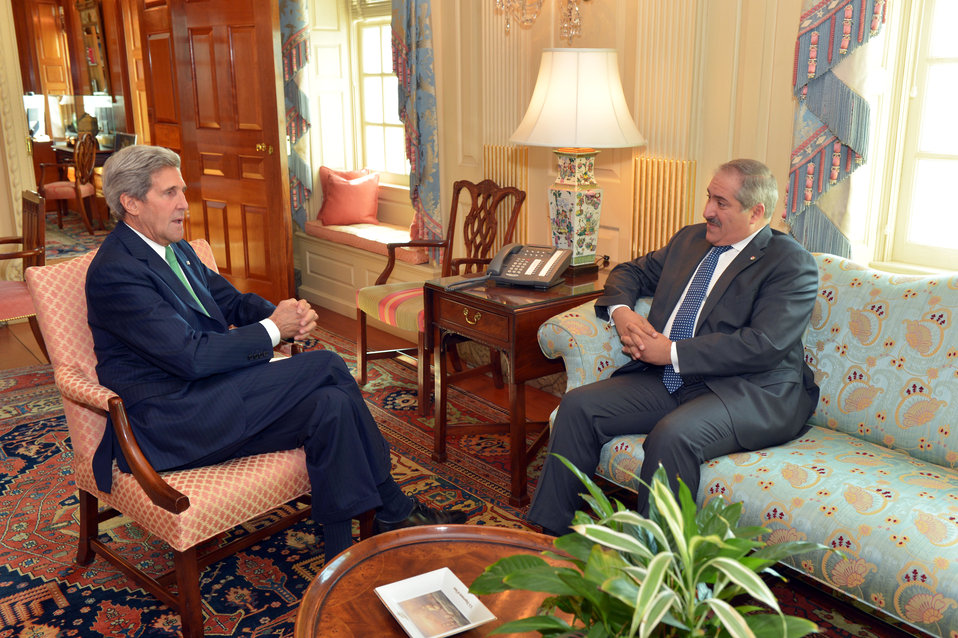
Secretary Kerry Meets With Jordanian Foreign Minister Judeh

U.S. Secretary of State John Kerry holds a bilateral meeting with Jordanian Foreign Minister Nasser Judeh at the U.S. Department of State in Washington, D.C., on October 15, 2013.